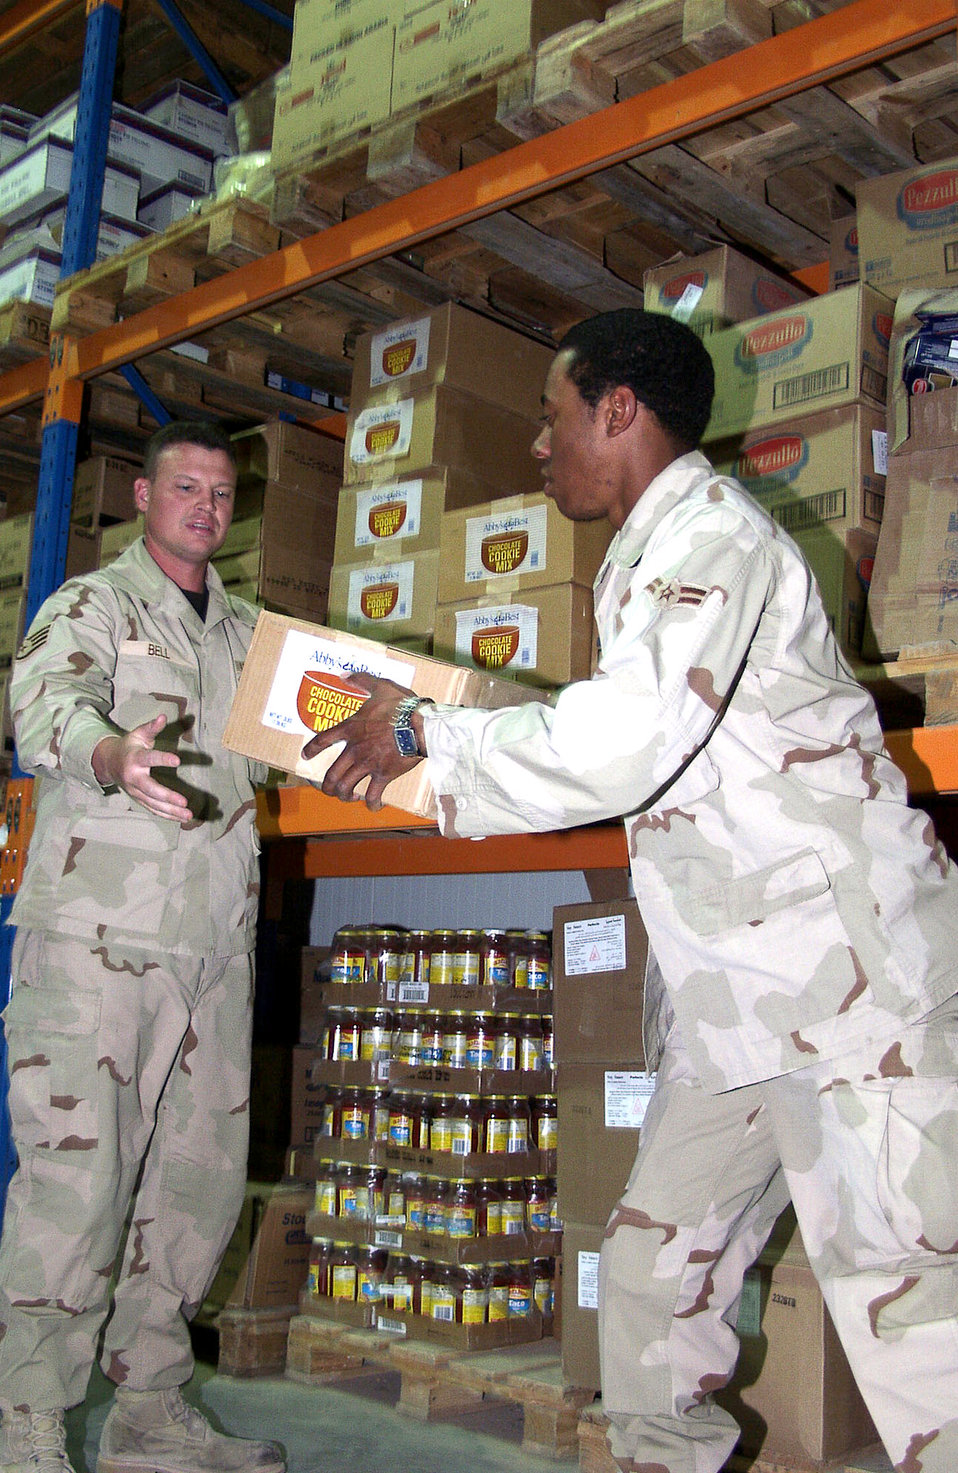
Stocking

OPERATION IRAQI FREEDOM – Staff Sgt. Steven Bell and Airman 1st Class Idris Royal stock the dry storage warehouse. Approximately $2,500,000 of subsistence is received and prepared monthly in support of the base population. Operation Iraqi Freedom is the multinational coalition effort to liberate the Iraqi people, eliminate Iraq’s weapons of mass destruction and end the regime of Saddam Hussein.